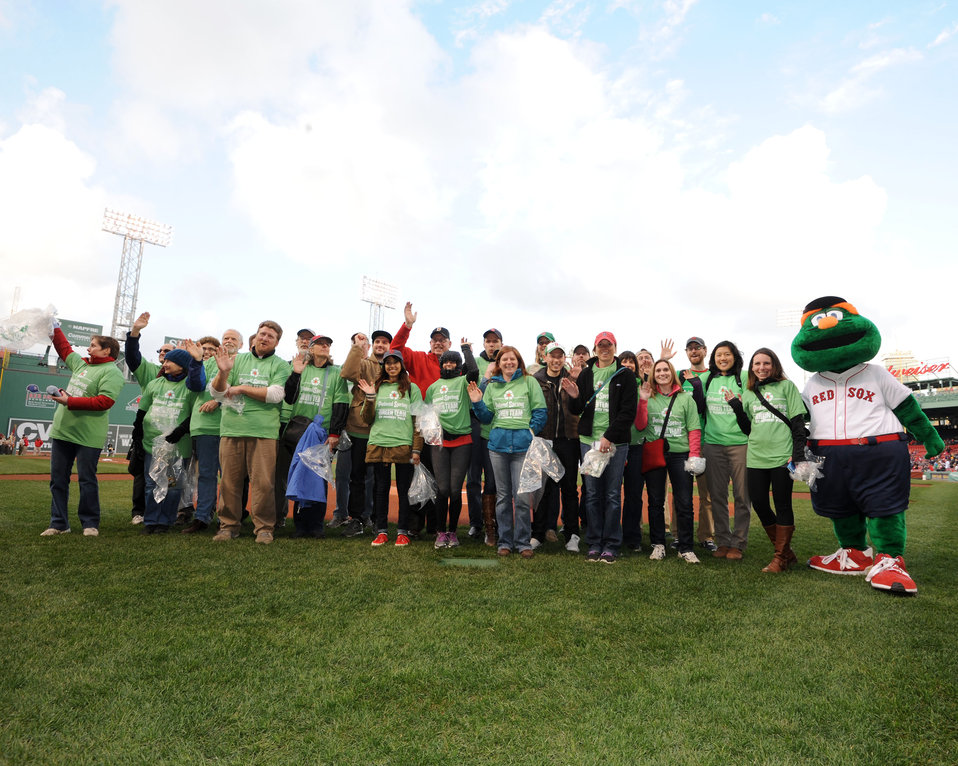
April 22, 2013 - EPA employees on the Red Sox field volunteering for the Fenway Park/Red Sox “Green Team”

Boston, MA, April 22, 2013 - On Earth Day 2013, EPA employees volunteered after work to be the recycling “Green Team” at Fenway Park. They helped celebrate the day and continued the already impressive recycling efforts underway by the Red Sox.

In 2012 alone, the Red Sox kept up an average of recycling approximately 3.4 tons of plastic and other items, and donated or composted 1.4 tons of food waste – at each game. Think of how much 'stuff' that kept away from landfills, especially when you consider their 81 home games per season.